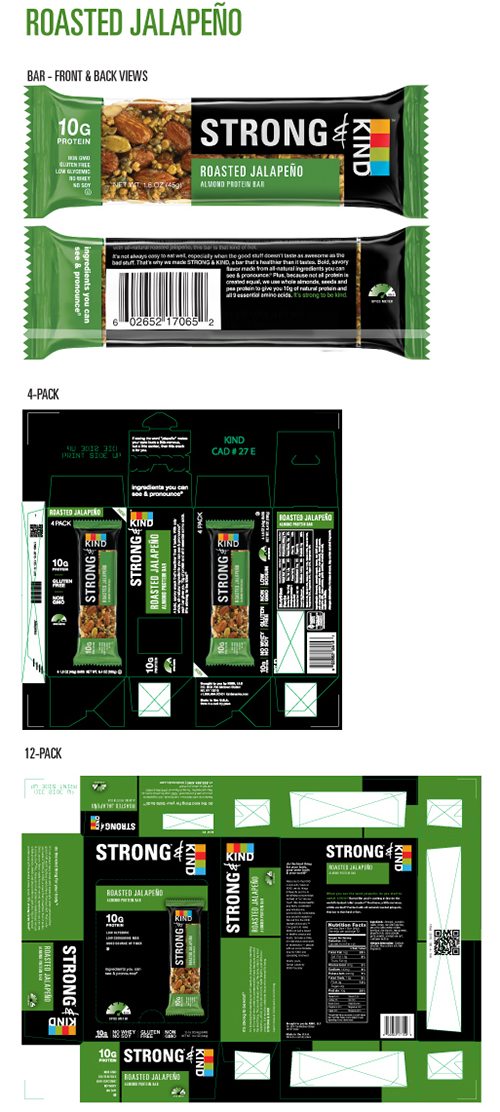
RECALLED – Bars

May 21, 2014 – Product Recall – Kind Healthy Snacks Issues Allergy Alert Due to Potential Presence of Peanut Protein in Strong & Kind Bars and Kind Healthy Grains Maple Pumpkin Seeds Bars.